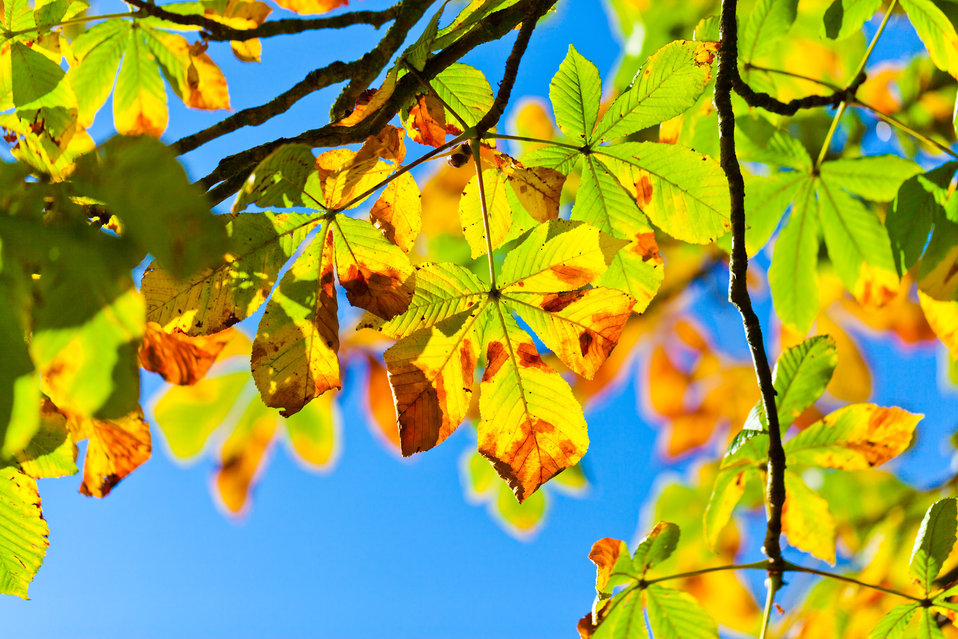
Autumn buckeye tree

Horse chestnut tree leaves in autumn.